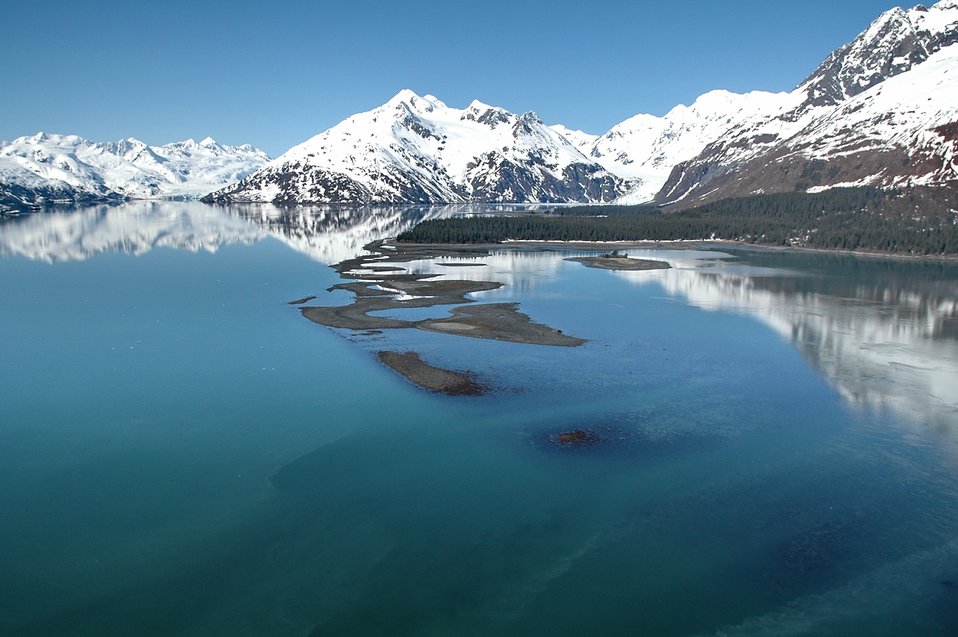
Aerial photograph. Near mirror-like reflectivity in Doran Strait. This image junctions with the previous image (line5081) and shows two glaciers as well as offshore shoals uncovering at low tide.